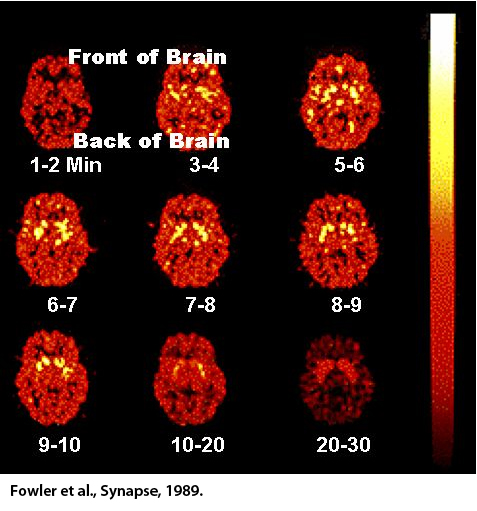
Brain Scan cocaine

Scientists can now measure the brain's response to drugs of abuse. This slide depicts images taken at different intervals following administration of radioactive cocaine. Yellow indicates places where cocaine binds in the brain and for how long.